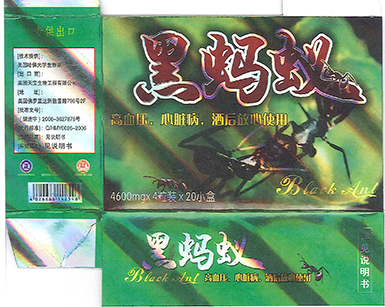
RECALLED – Dietary Supplement

April 1, 2014 – Product Recall – Nova Products, Inc. Issues Voluntary Nationwide Recall of Dietary Supplements with Undeclared Active Pharmaceutical Ingredients.